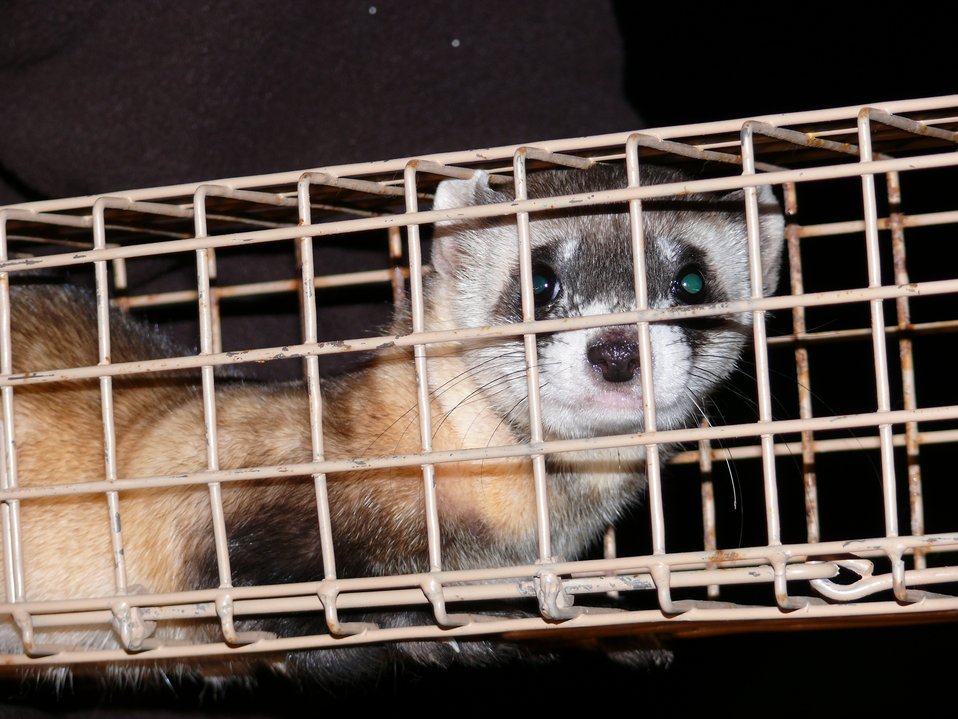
Emerald Eyes

A black-footed ferret peers out of a trap just prior to being transported to a facility where it will be vaccinated against canine distemper and fitted with a transponder chip. These surveys help monitor the status of reintroduced populations.

Credit: Dan Mulhern / USFWS

Photo Contest Entry #139